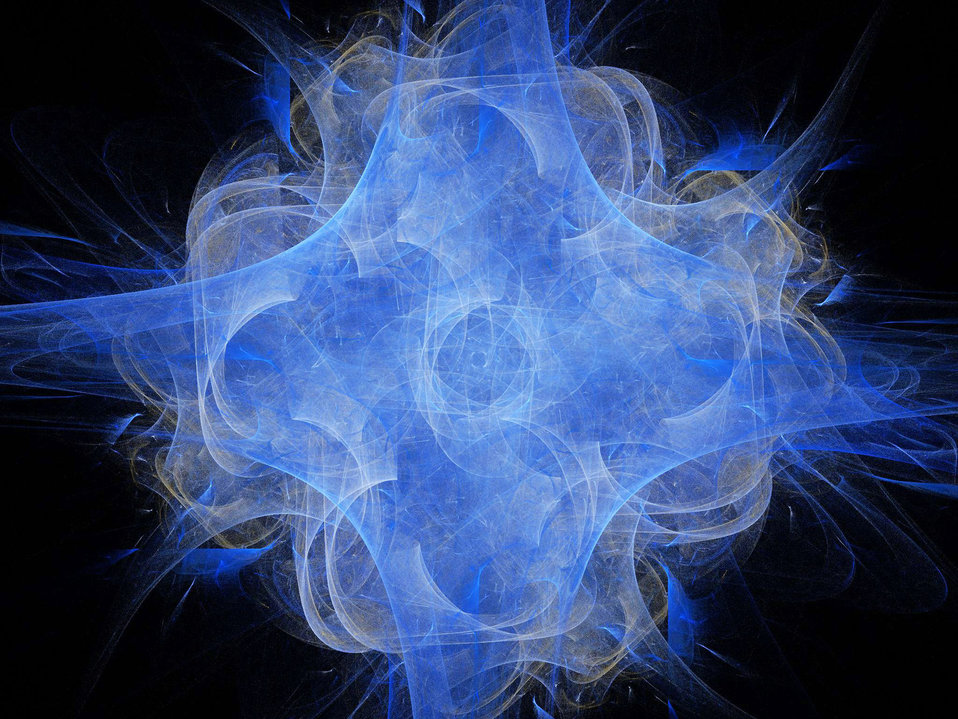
Blue

Fractal in blues.